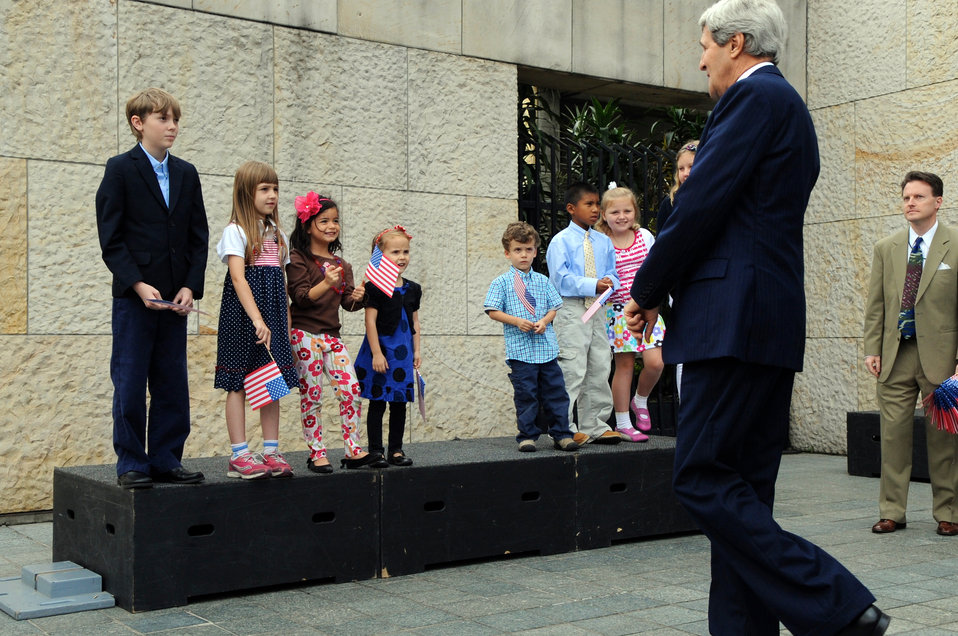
Secretary Kerry Meets With Children of Embassy Bogota Staffers

U.S. Secretary of State John Kerry meets a group of children from the staff at the U.S. Embassy in Bogota during a visit to Colombia on August 12, 2013.